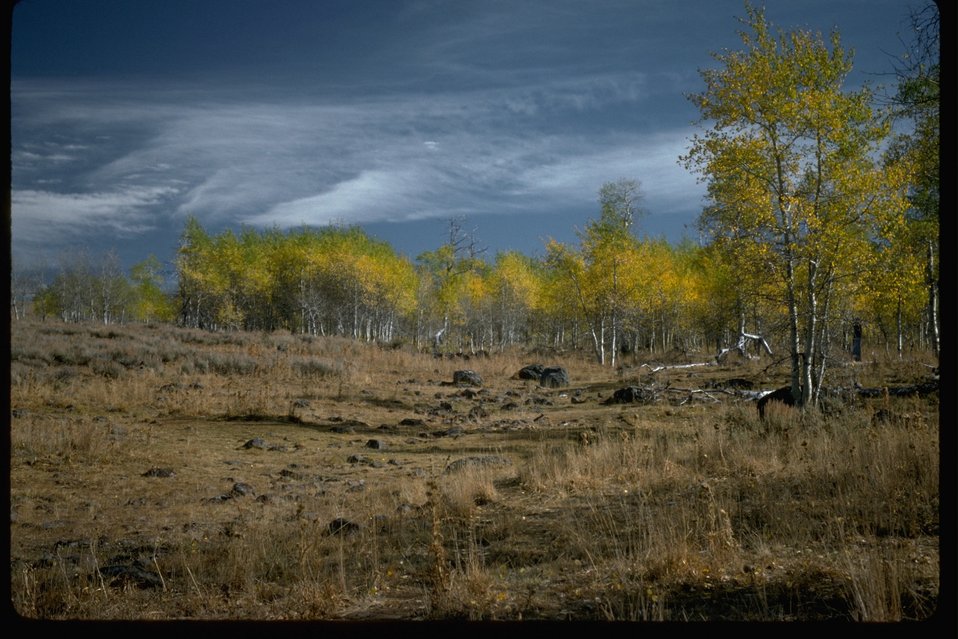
Aspen color near Nye Ranch area in the Steens area.